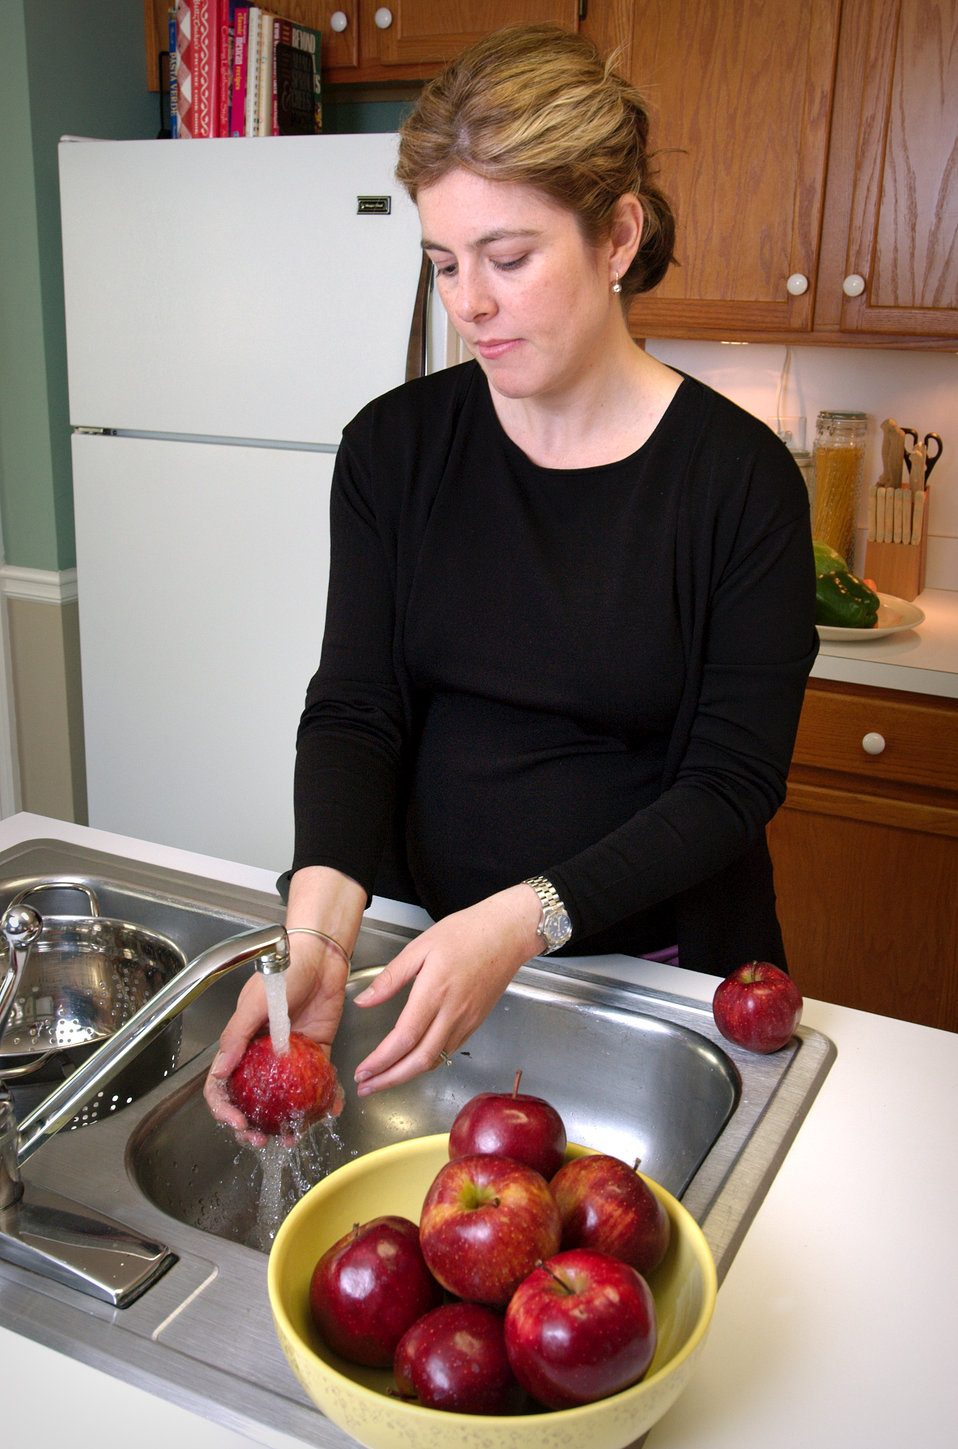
A woman washing apples

This photograph depicted a pregnant woman washing a batch of apples prior to peeling, and eating one from the group.In order to avoid acquiring a possible foodborne illness from eating a peeled food, one should wash such a food in warm water prior to peeling, which will greatly reduce the chances of introducing a foodborne pathogen to the clean interior. Foodborne disease is caused by consuming contaminated foods or beverages. Many different disease-causing microbes, or pathogens, can contaminate foods, so there are many different foodborne infections. In addition, poisonous chemicals, or other harmful substances can cause foodborne diseases if they are present in food.